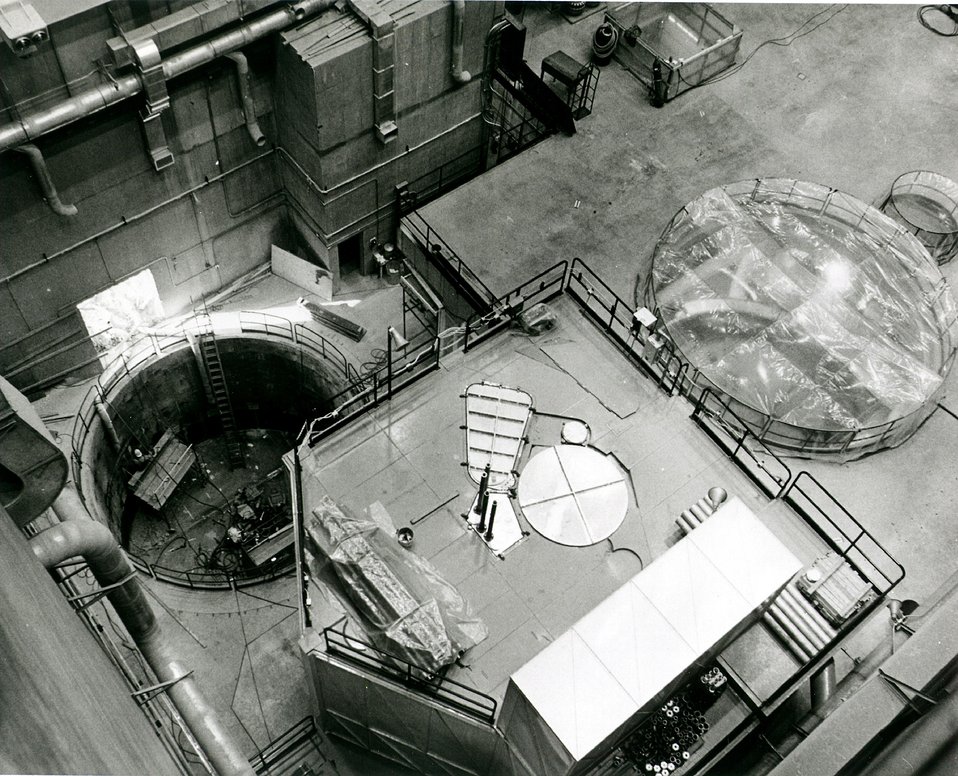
All Fast Flux Test Facility (FFTF) reactor system components scheduled for service in a sodium environment will undergo tests in sodium simulating their actual operation at reactor temperatures. c.1973.